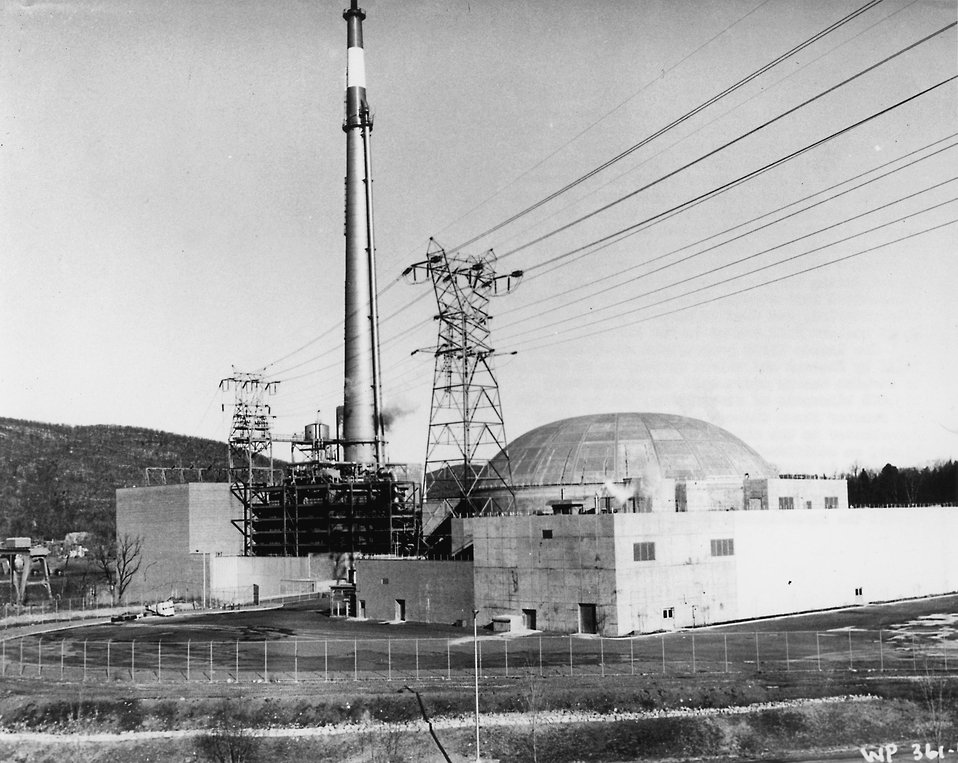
Consolidated Edison's Indian Point nuclear power station is located on the Hudson River about 24 miles north of New York City. This station became operable August 7, 1962. Circa 1963.